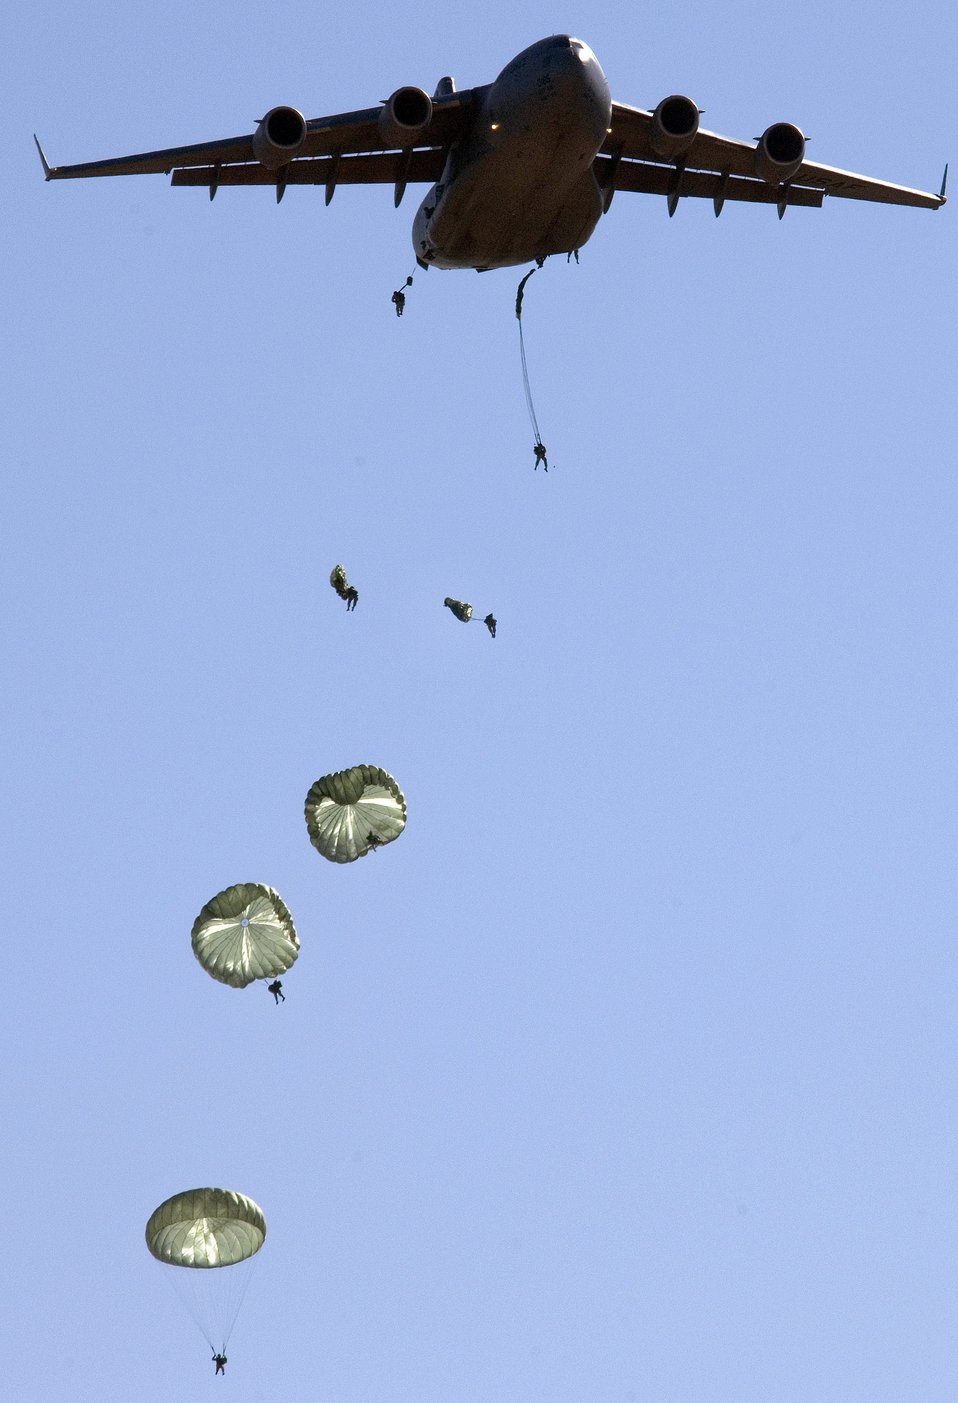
Landing zone

Soldiers from the 82nd Airborne Division jump from a C-17 Globemaster over a Fort Bragg, N.C., landing zone Wednesday, April 5, 2006. The C-17 is from Charleston Air Force Base, S.C.